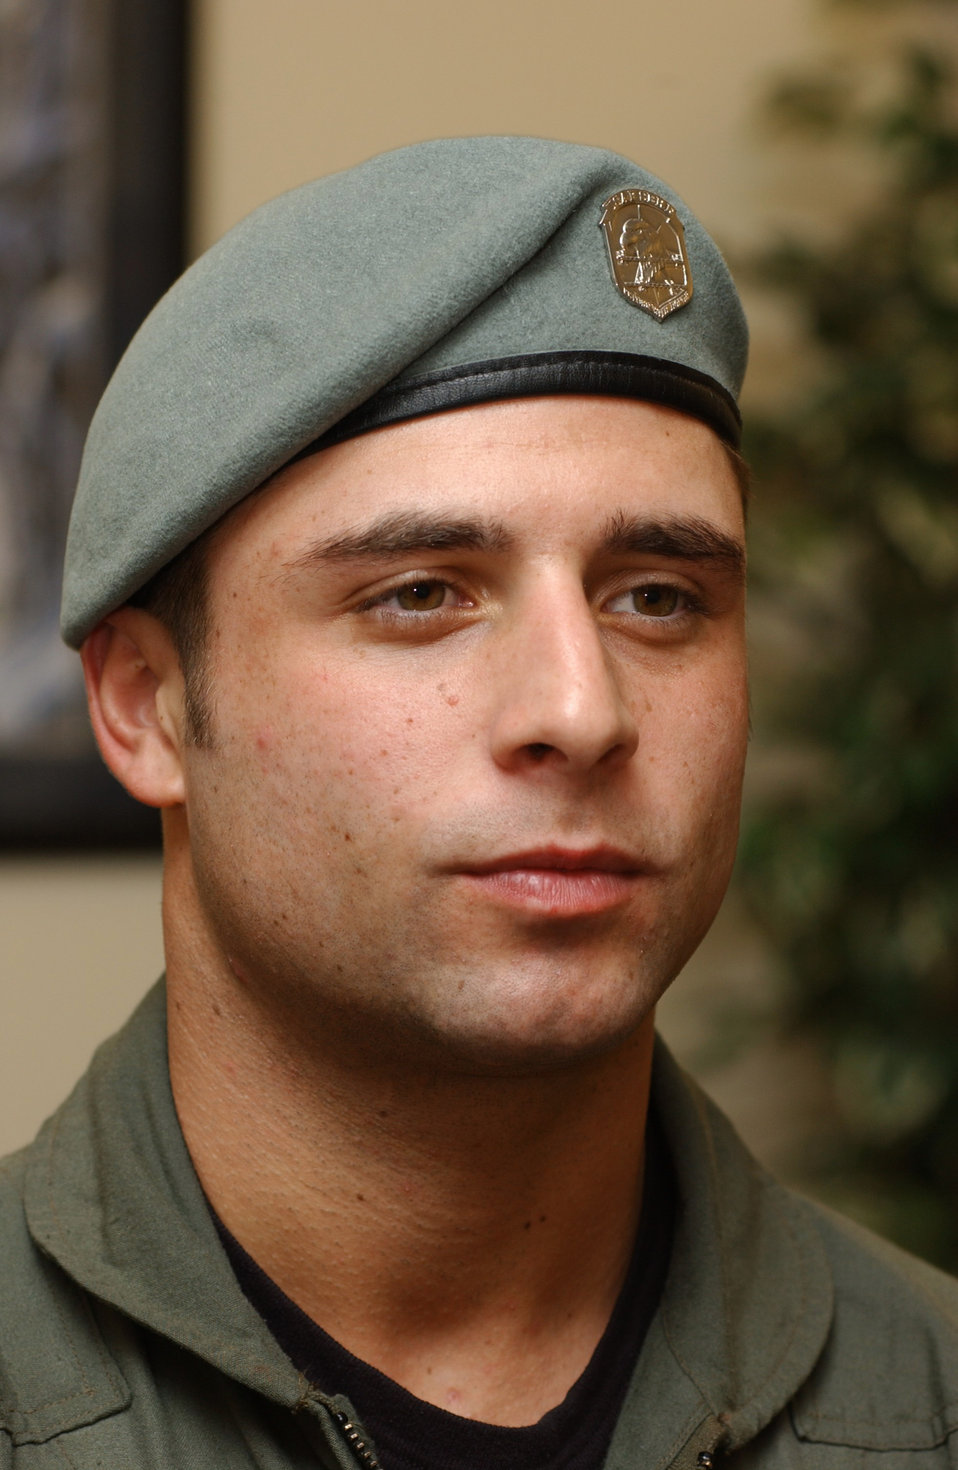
SERE graduates authorized berets

FAIRCHILD AIR FORCE BASE, Wash. -- Staff Sgt. John Hermoian wears the new Survival, Evasion, Resistance and Escape instructor beret. Students who complete the SERE Specialist technical school here are now qualified to wear the SERE beret. Sergeant Hermoian is assigned to the 22nd Training Squadron here.